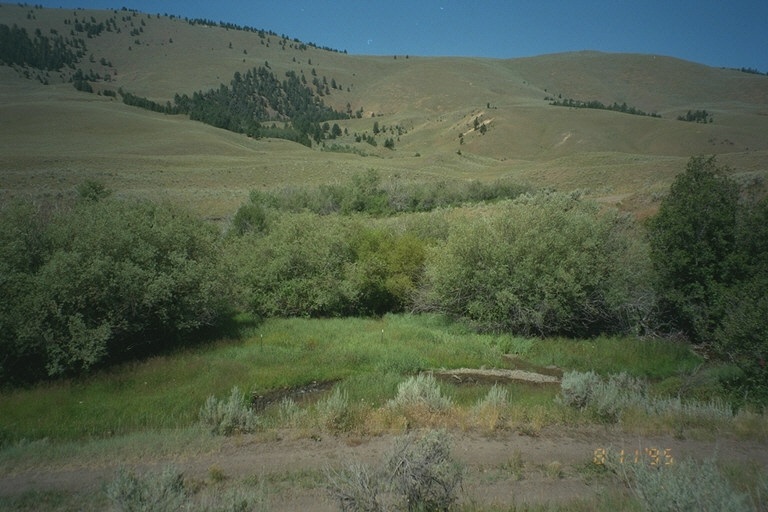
Riparian area Public Lands Salmon Field Office UCSC Upper Columbia Salmon Clearwater District